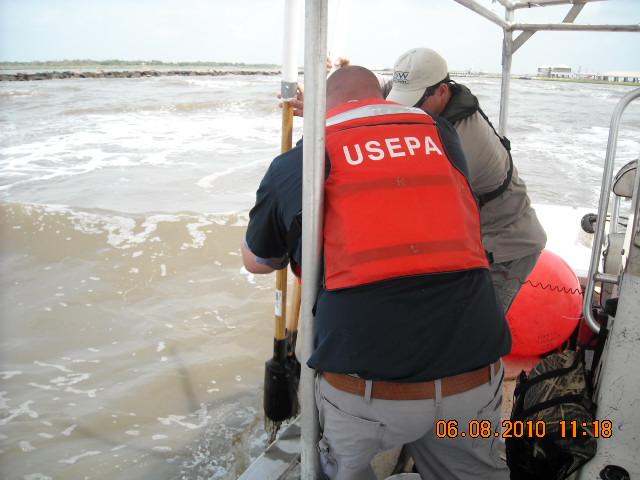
EPA Sediment Sampling Along the Gulf Coast

Sampling sediment for oil related compounds along the Gulf.